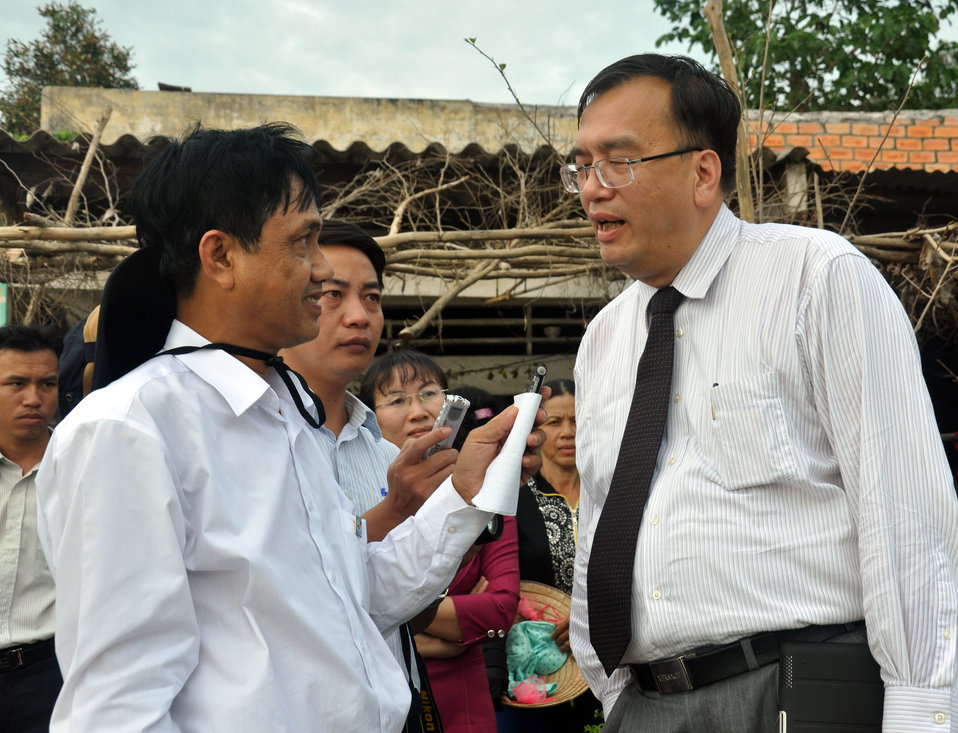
U.S. Consul General Le An visits USAID beneficiaries

USAID site visit to Long An Province to visit flood relief beneficiaries